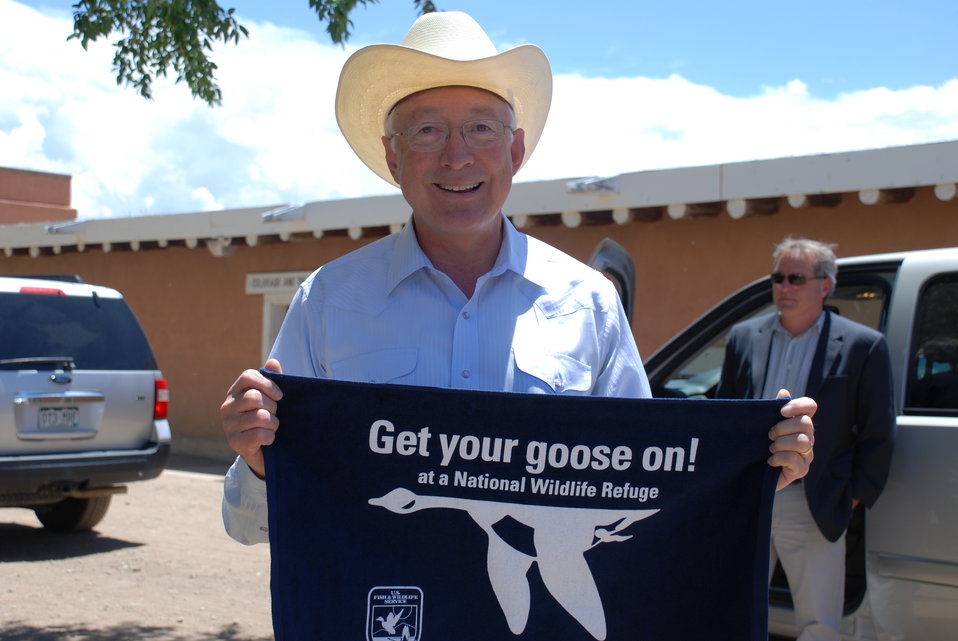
Ken Salazar Gets His Goose On!

Secretary of the Interior, Ken Salazar, poses with his GYGO! towel after speaking at an event announcing the historic donation of a 90,000-acre conservation easement in southern Colorado.